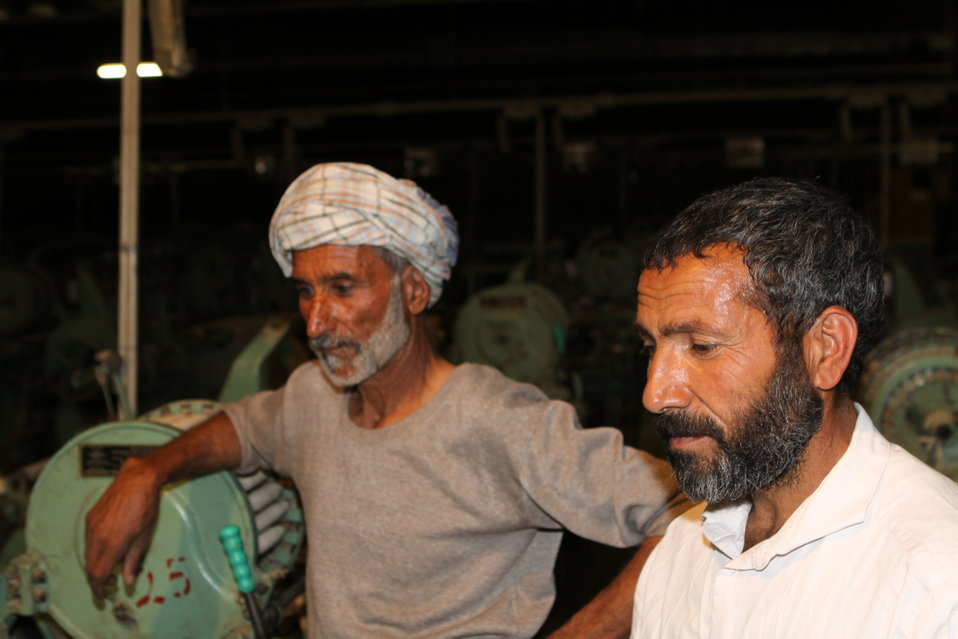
100525 Hirat Textile Company 743